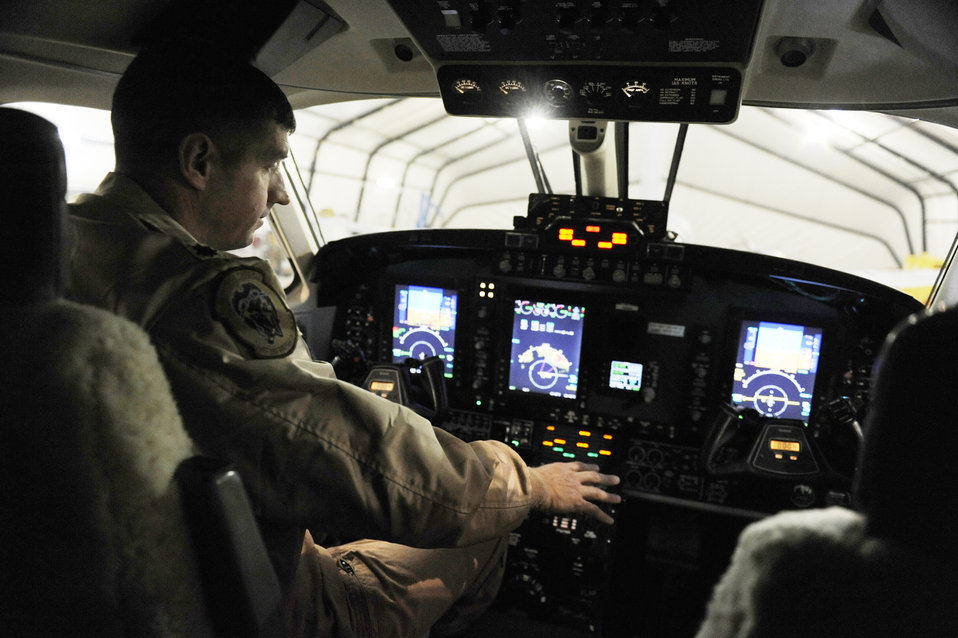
Liberty Airmen watch over Afghan

Lt. Col. Rob Weaver, the 4th Expeditionary Reconnaissance Squadron director of operations at Bagram Airfield, Afghanistan, goes through a routine check of the instrument panel in an MC-12 Liberty Feb. 27, 2010. The MC-12 brings tactical intelligence, surveillance and reconnaissance to ground commanders in Afghanistan.